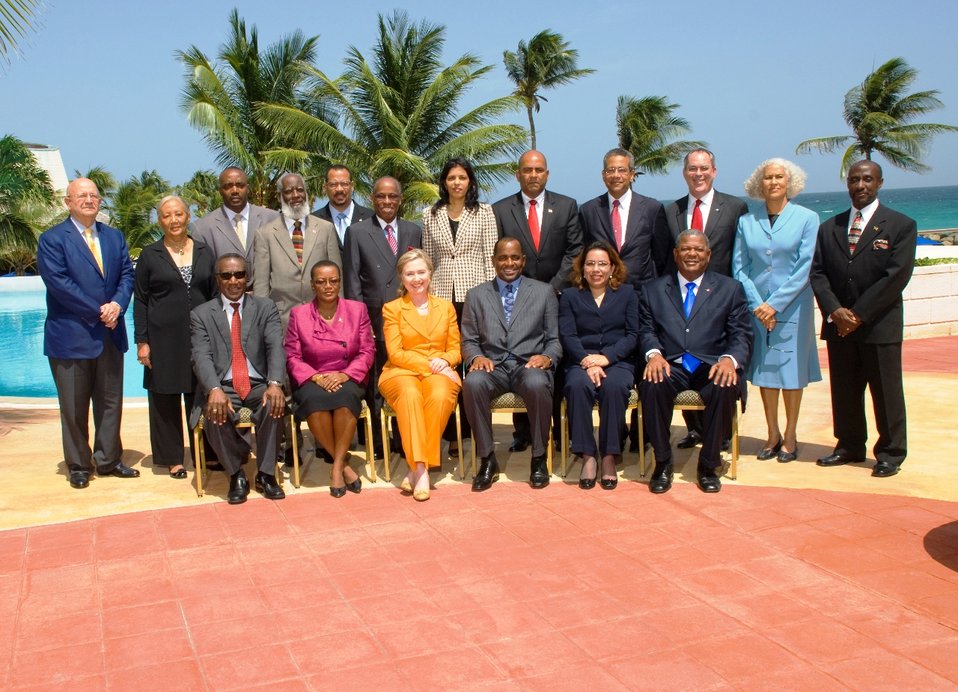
Secretary Clinton With CARICOM Ministers

U.S. Secretary of State Hillary Rodham Clinton poses for a photo with CARICOM ministers in Bridgetown, Barbados, on June 10, 2010. [State Department photo/ Public Domain]

[Left to Right (Back Row): H.E. Carlos Morales Troncoso, Foreign Minister of the Dominican Republic; H.E. Mrs. Marie Michèle Rey, Foreign Minister of Haiti; Hon. Rayburn Blackmore, Dominica; Hon. Wilfred Elrington, Foreign Minister of Belize; Hon. Rufus Bousquet, Foreign Minister of St. Lucia; Hon. Sir Louis Straker, Deputy Prime Minister and Foreign Minister of St. Vincent and the Grenadines; H.E. Ambassador Soeknandan, Suriname; Hon. Peter David, Foreign Minister of Grenada; Hon. Dr. Kenneth Baugh, Deputy Prime Minister and Foreign Minister of Jamaica; Hon. Brent Symonette, Deputy Prime Minister and Foreign Minister of The Bahamas; Ms. Susan Gordan, Director of CARICOM and Caribbean Affairs, MFA of Trinidad and Tobago; and Hon. Sam Condor, Deputy Prime Minister and Foreign Minister of St. Kitts and Nevis].

[Left to Right (Front Row): H.E. Edwin Carrington, Secretary General of CARICOM; Senator the Hon. Maxine McClean, Foreign Minister of Barbados; Mrs. Hillary Rodham Clinton, US Secretary of State; Hon. Roosevelt Skerrit, Prime Minister of Dominica and Chair of COFCOR; Hon. Carolyn Rodriguez-Birkett, Foreign Minister of Guyana; and Hon. Baldwin Spencer, Prime Minister and Minister of Foreign Affairs of Antigua and Barbuda].